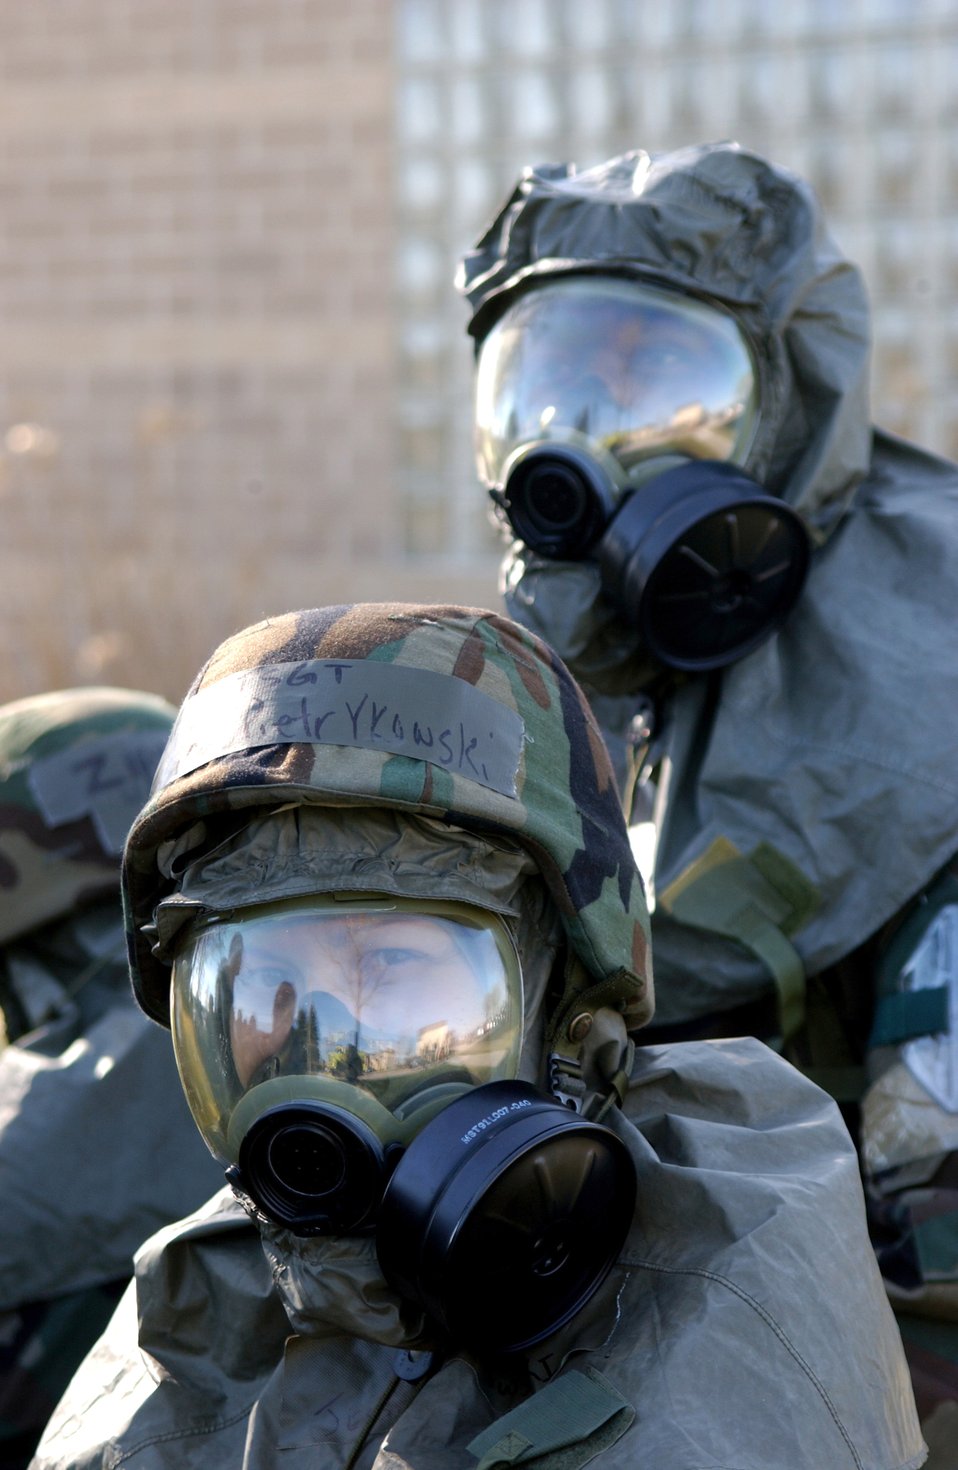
Survive and operate

GENERAL MITCHELL INTERNATIONAL AIRPORT, Wis. -- Airmen from the Wisconsin Air National Guard's 128th Air Refueling Wing relocate to a bunker after their building was destroyed by a simulated fire here April 4 during an ability to survive and operate exercise.